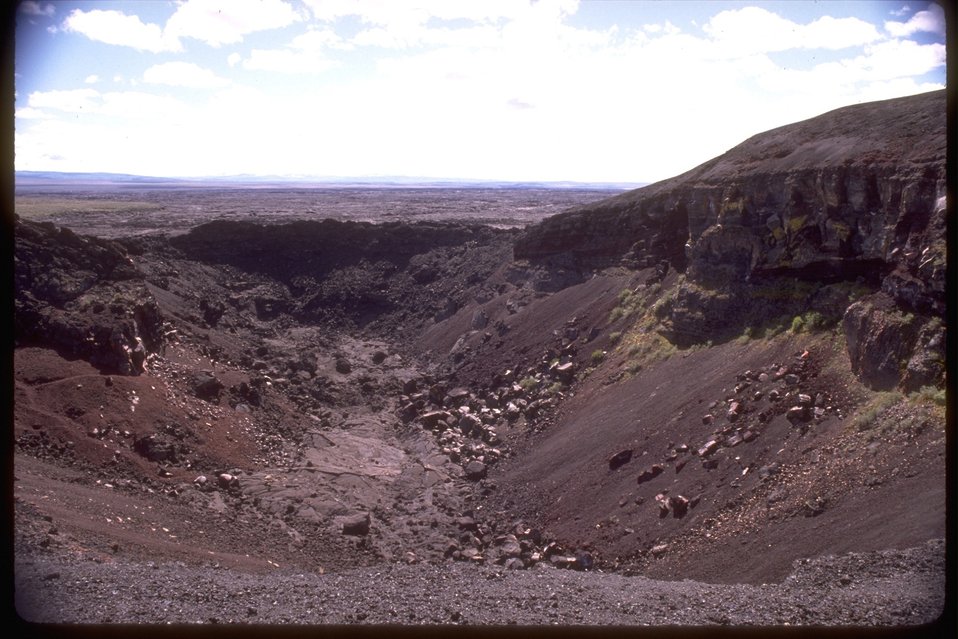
Jordan Craters Series.